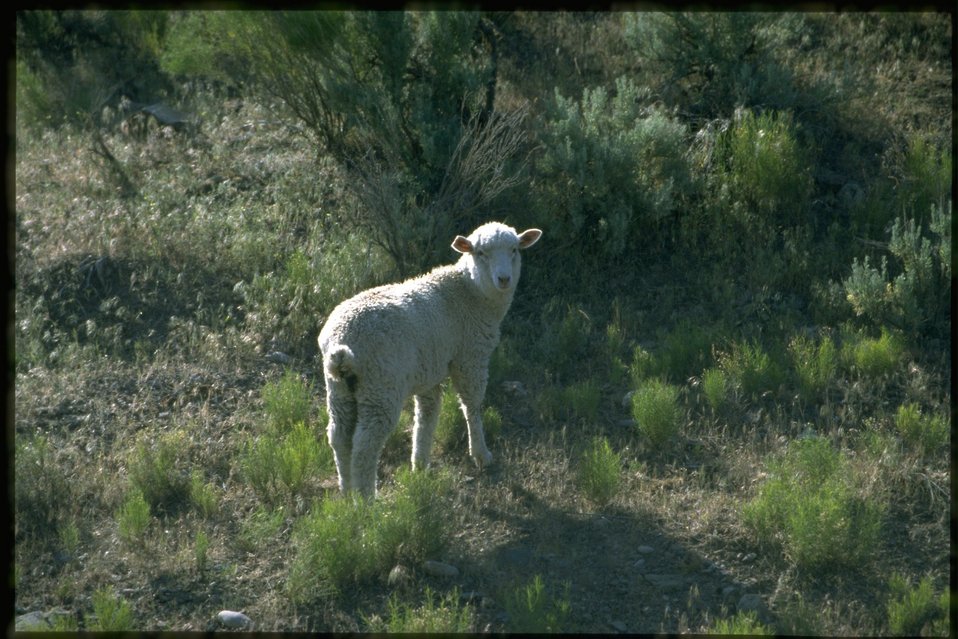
Farshot of sheep (meadow maggot).